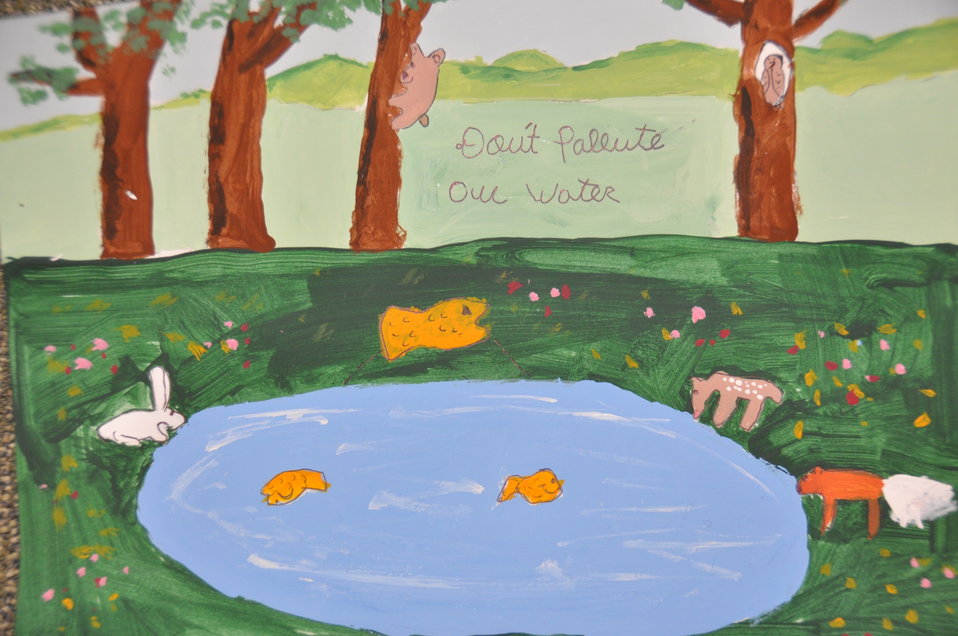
Olivia, Grade 5, Connecticut